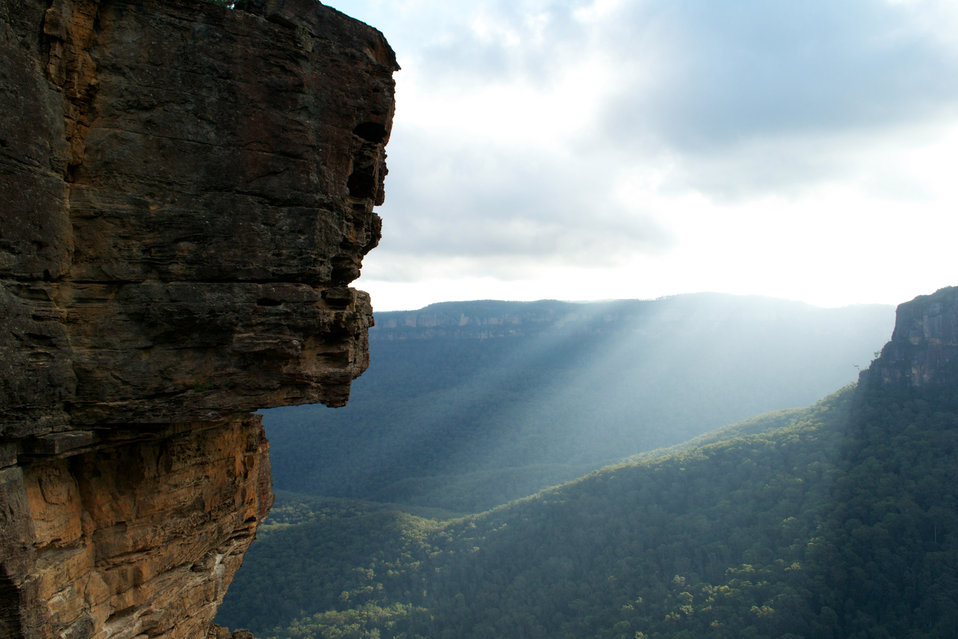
Blue mountains in australia.